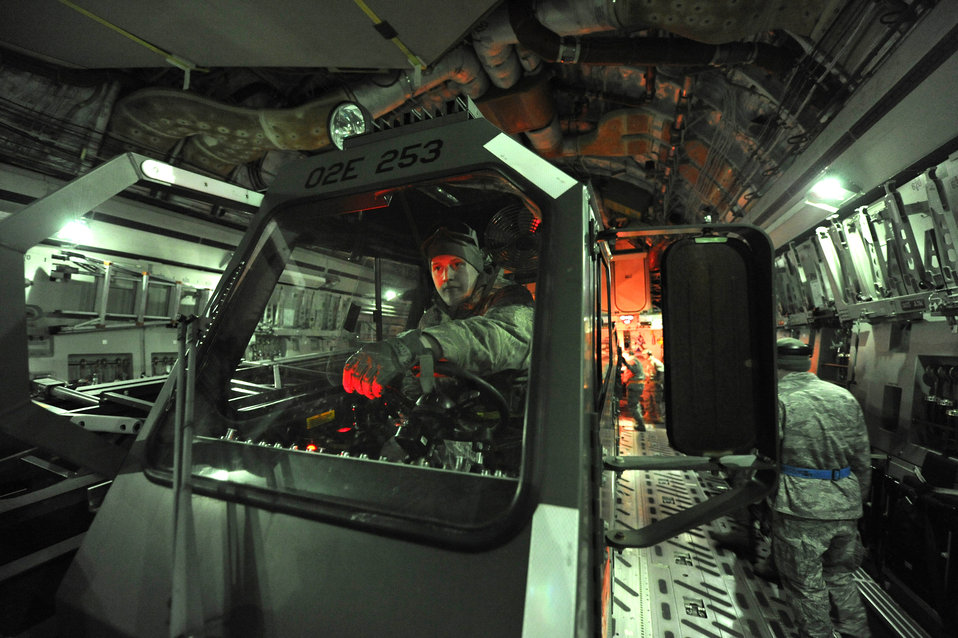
Good to go

Staff Sgt. Casanova Geary waits for clearance to drive a next-generation small loader off of a C-17 Globemaster III during a nighttime engine-running offload Feb. 23, 2011, at Joint Base McGuire-Dix-Lakehurst, N.J. Sergeant Geary is an aerial port technician assigned to the 621st Contingency Response Wing.